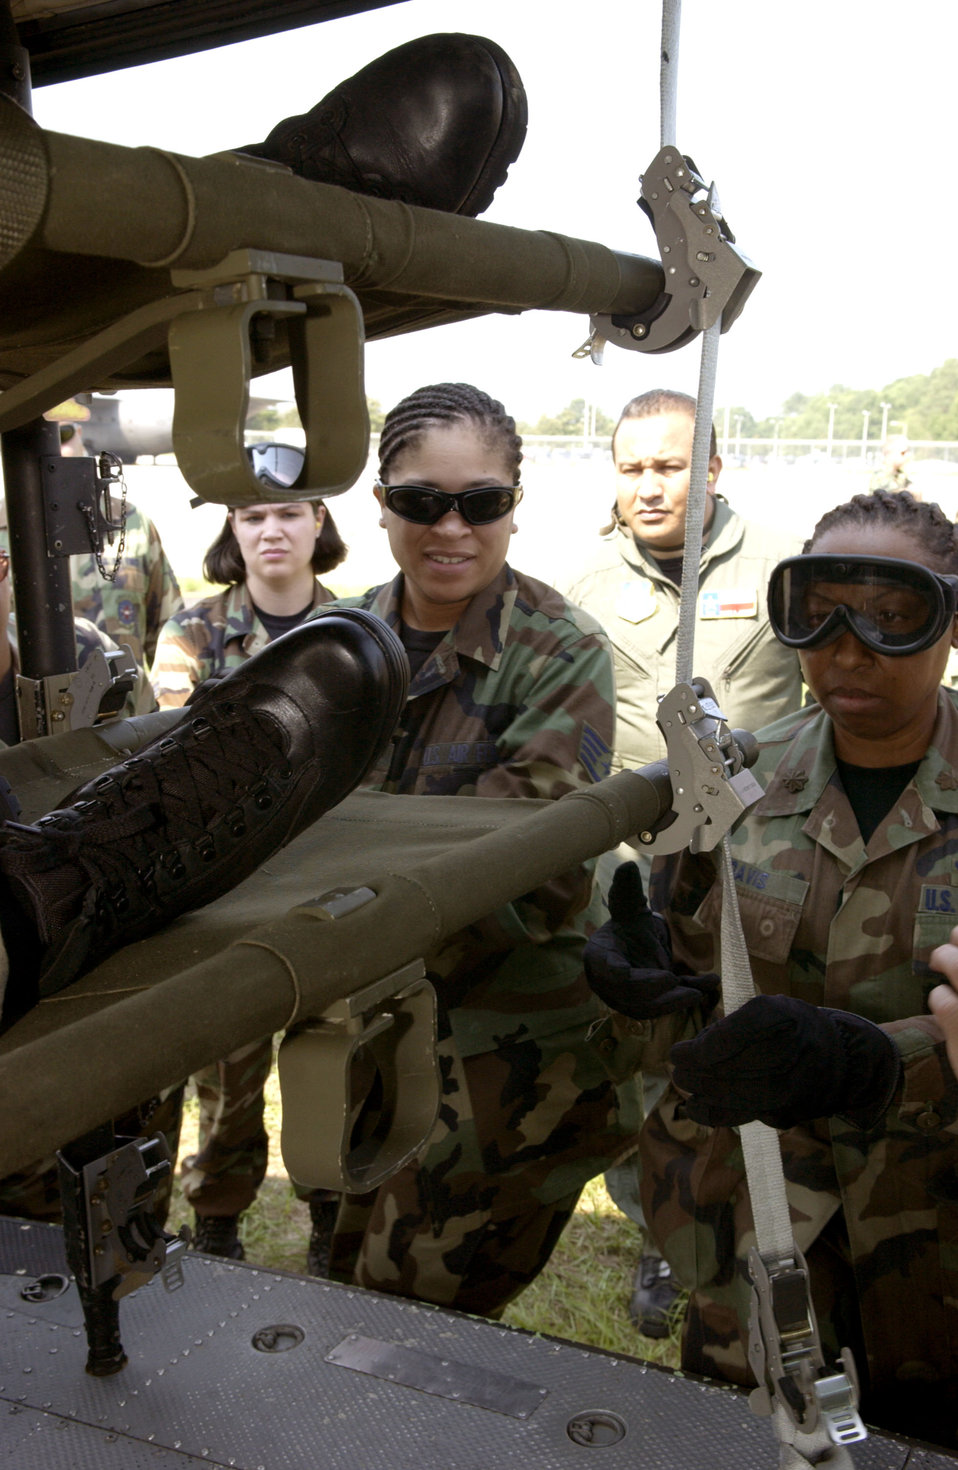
Airmen, Soldiers polish skills at Golden Medic

Air Force medical professionals train in the loading and unloading of patients to an Army UH-I Huey at Augusta Regional Airport, Ga., on Thursday, June 15, as part of Golden Medic 2006. The annual medical exercise involves medical servicemembers from various military branches, including the Air Force and Army this year.